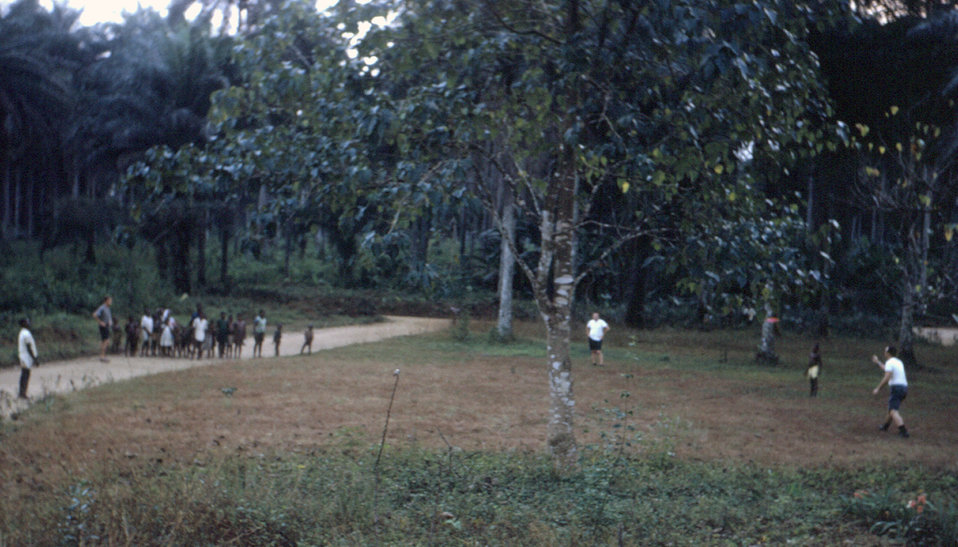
Among other CDC EIS officers, Dr. Karl Western (right) was photographed here throwing a Frisbee with children in one of the refugee camps set up in southeast Nigeria during the Biafran war.